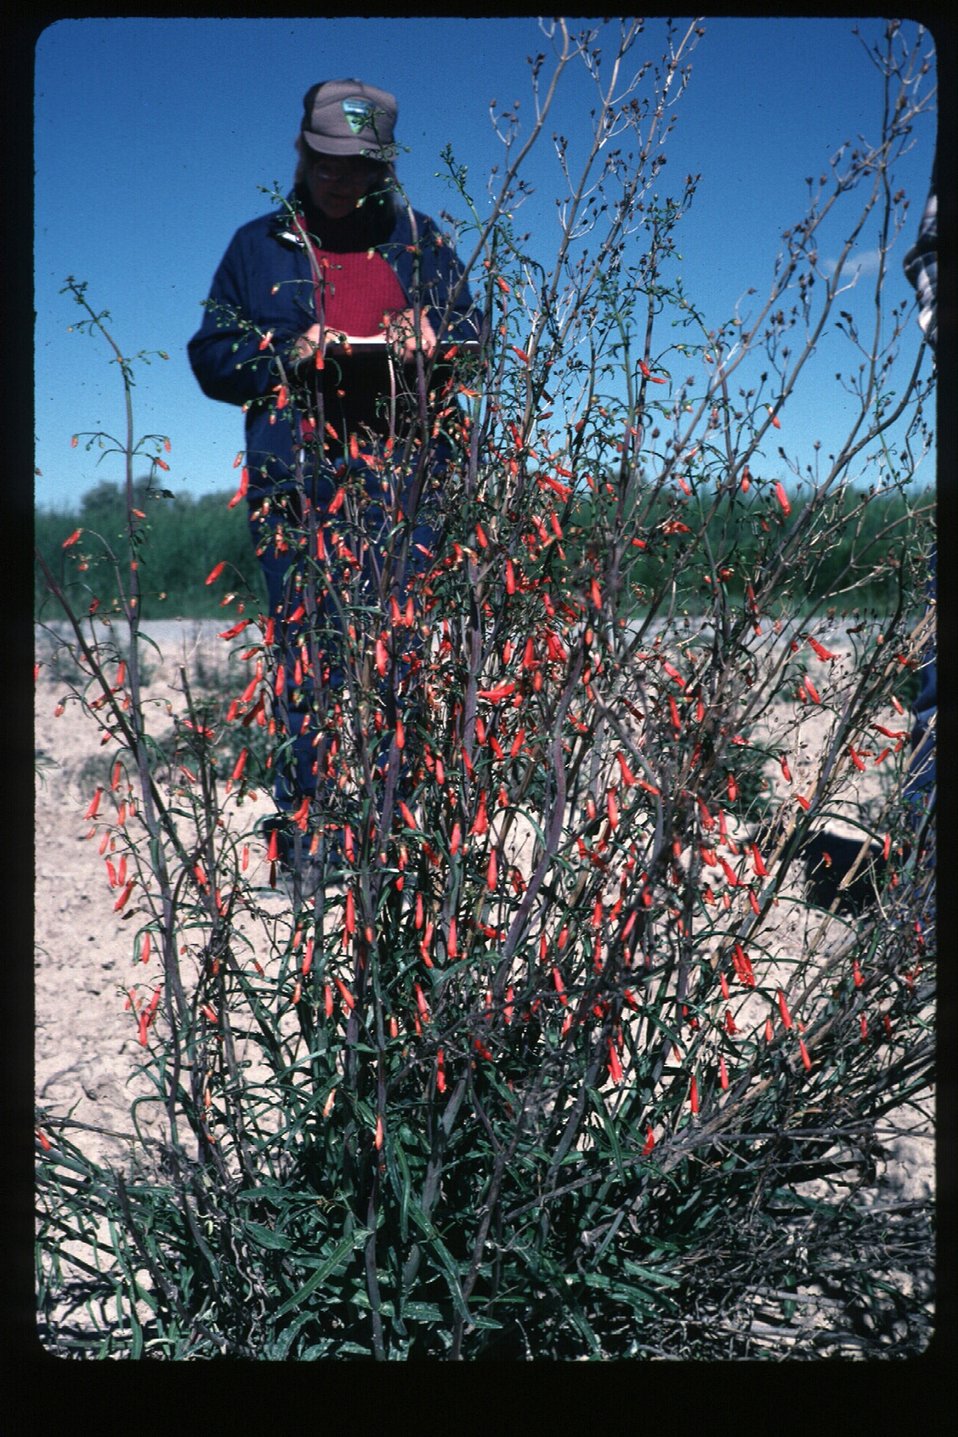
Penstemon barbatus Brush, grasses Wildflowers